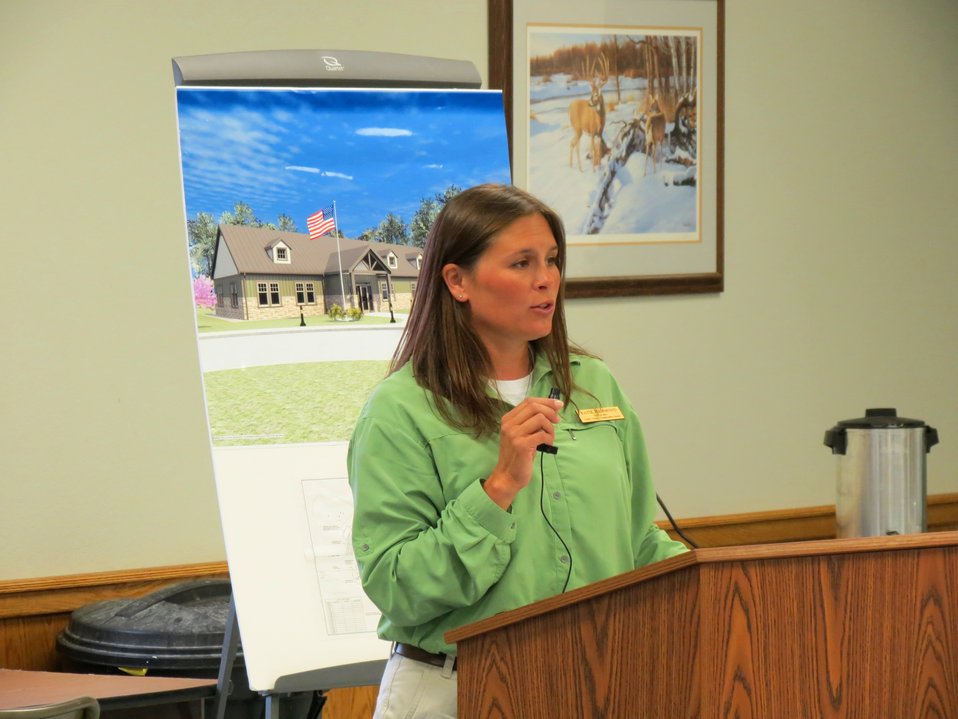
Katie Hammond

Louisa County naturalist Katie Hammond explains the benefits of the new building for environmental education programs on the refuge.